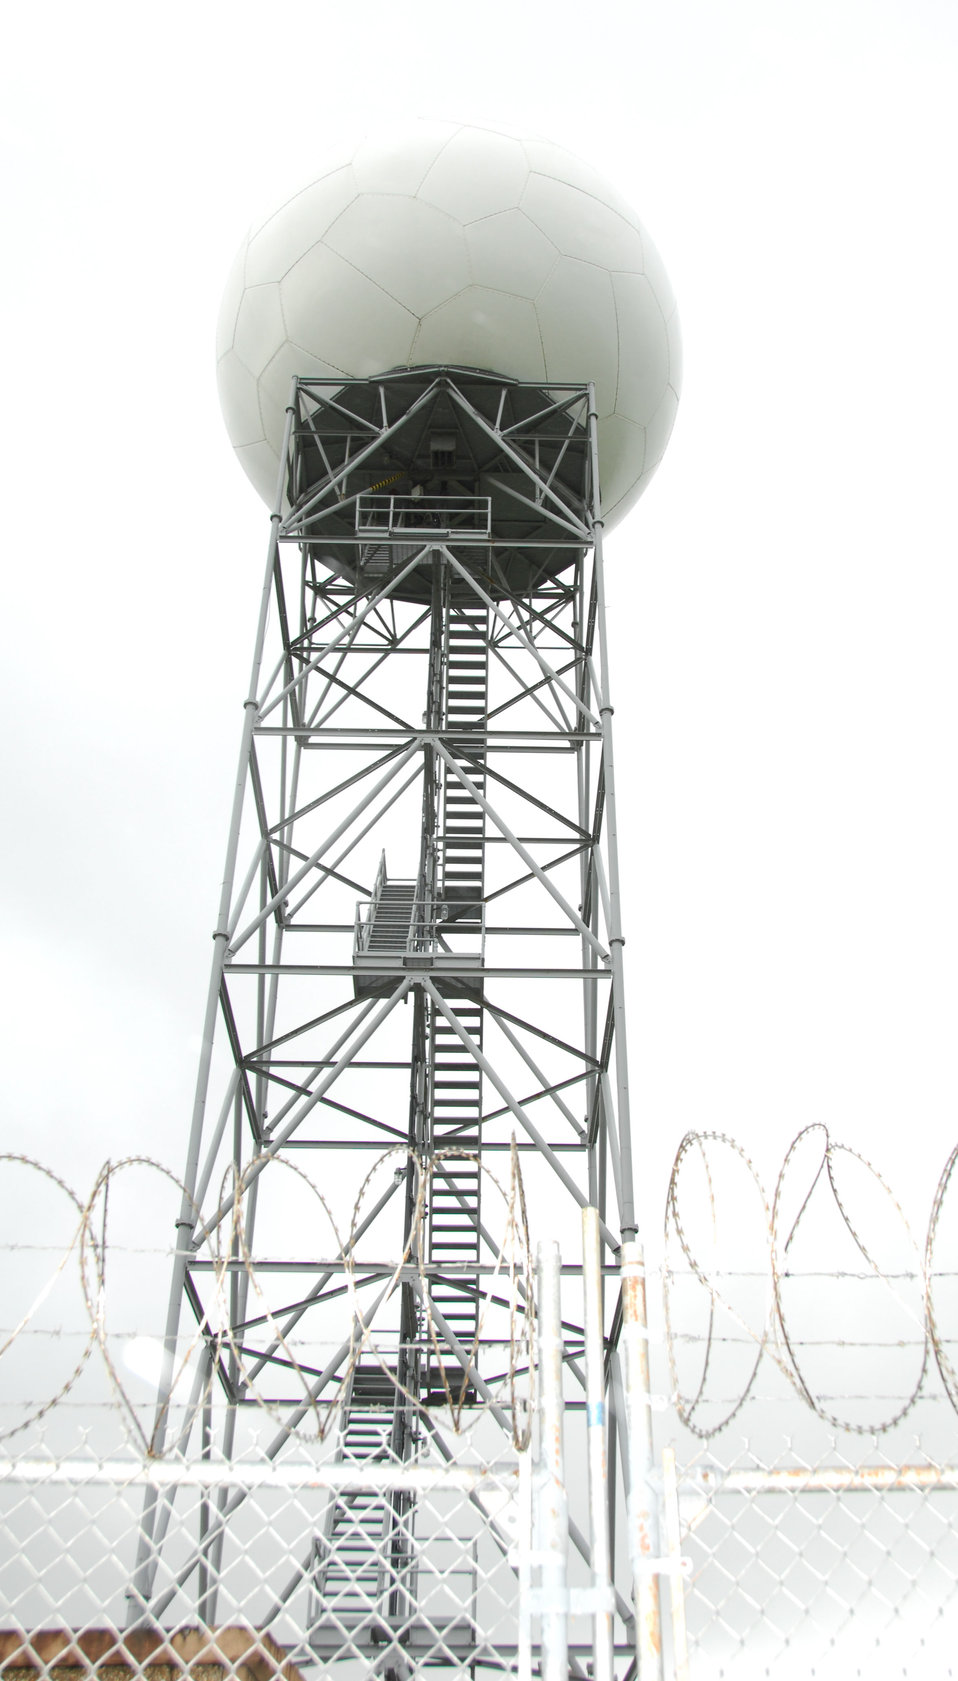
Shared weather radar ensures mission success

This Next Generation Weather Radar weather radar provides data for the 36th Operations Support Squadron at Andersen Air Force Base, Guam, the Federal Aviation Administration and the National Weather Service. Members of the 36th Communications Squadron ground radar systems flight provide maintenance support for the radar.